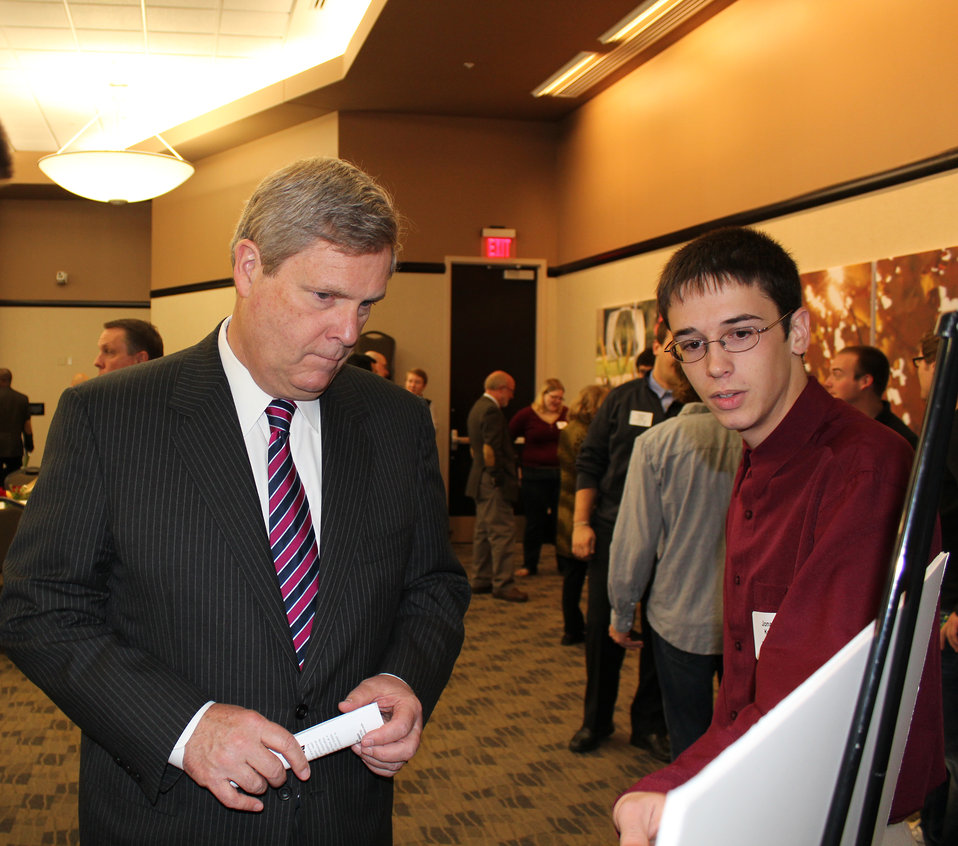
Agriculture Secretary Tom Vilsack visits with Bradley University engineering student, Jonathan Kellogg, about his project, at the Future of Midwest Agriculture and Environmental Sustainability symposium on Thursday, Nov. 3, 2011, at Bradley University in Peoria, IL.